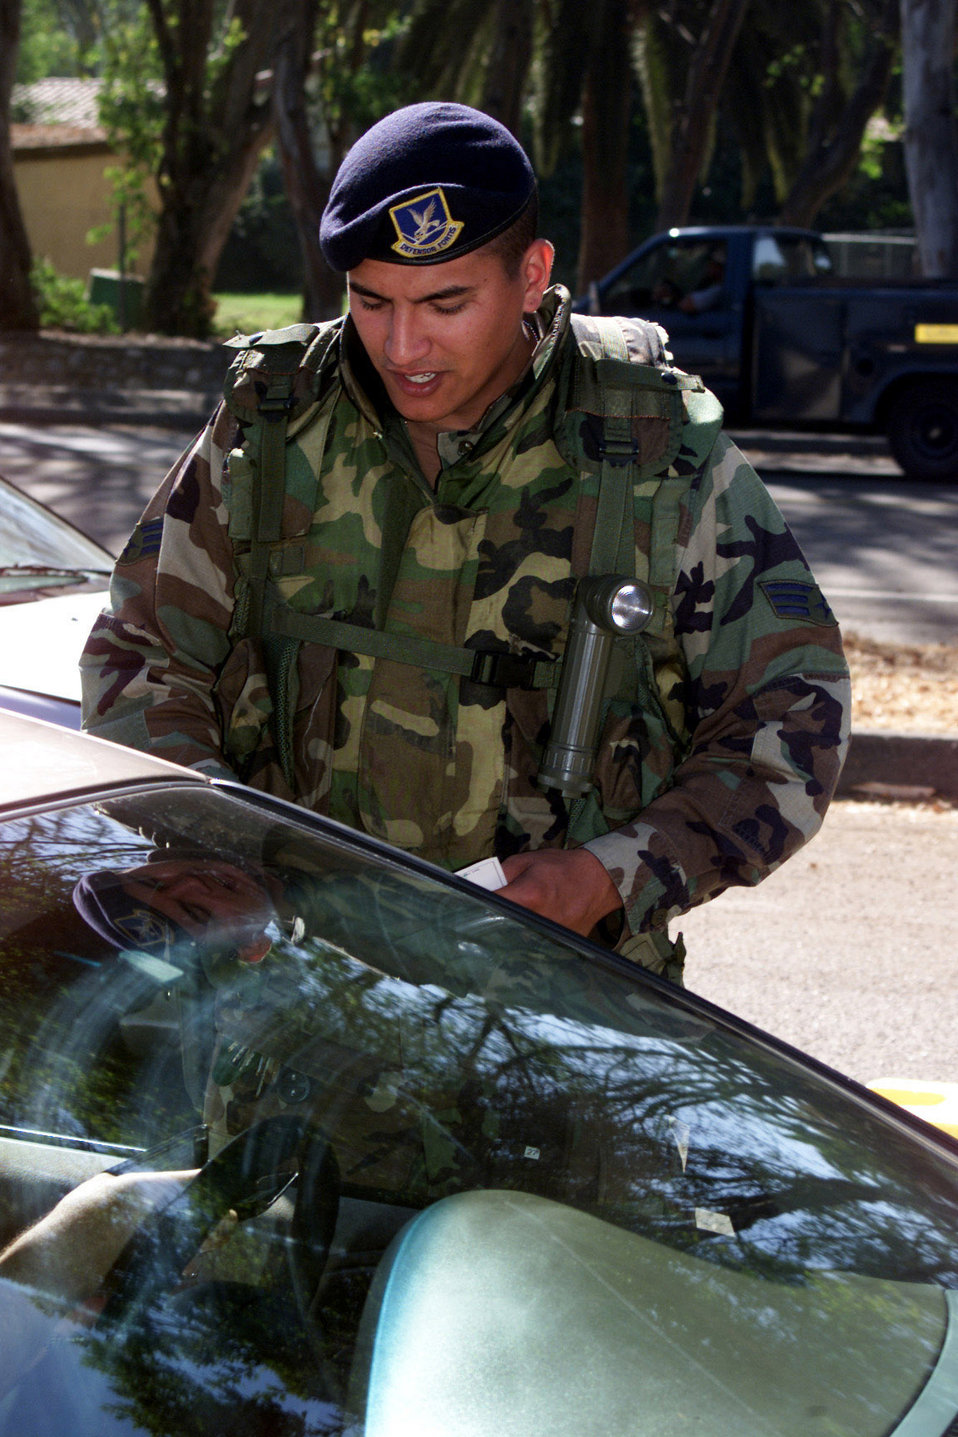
Kervin

MARCH FIELD, Calif. -- Senior Airman Shelby Kervin, a security forces specialist from the 507th Security Forces Squadron at Tinker Air Force Base, Okla., verifies a driver's identification at the main entry point of March Field. March Field security forces, augmented by security forces from Tinker, remain vigilant during heightened security conditions required for Operation Noble Eagle.